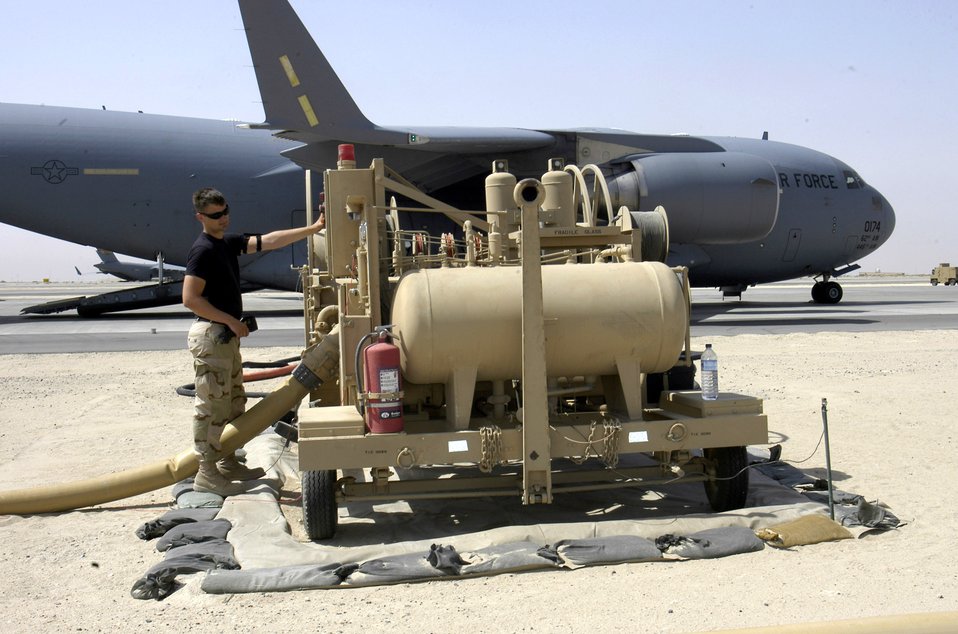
New fuels system saving Air Force time, money

Senior Airman Zak Lancaster monitors the gauges on a new fueling system while refueling a C-17 Globemaster III on Wednesday, May 31, 2006, in support of Operation Iraqi Freedom. Airman Lancaster is with the 386th Expeditionary Logistics Readiness Squadron.